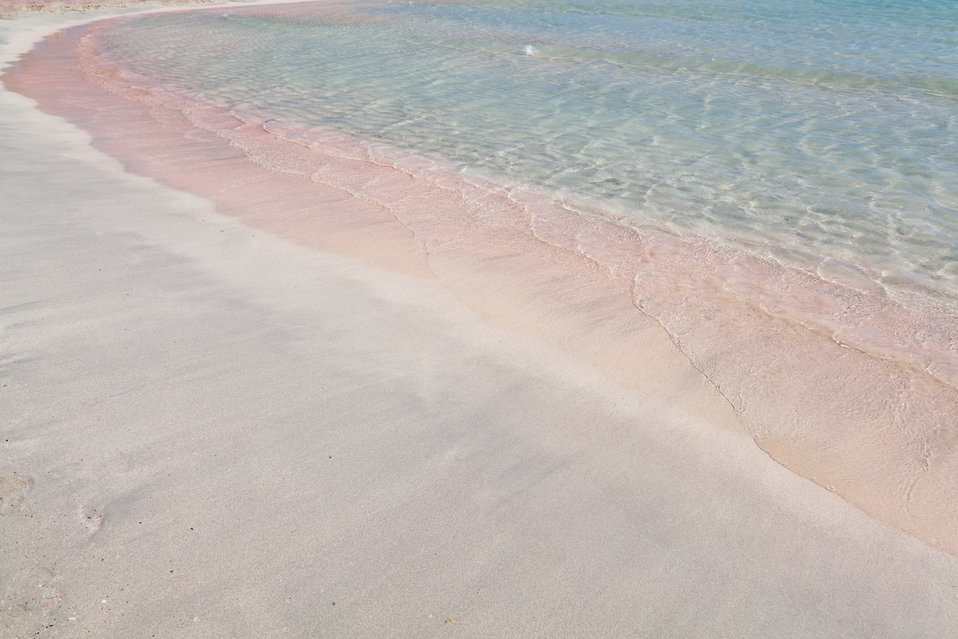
Elafonissi beach

Elafonissi pink beach in crete.